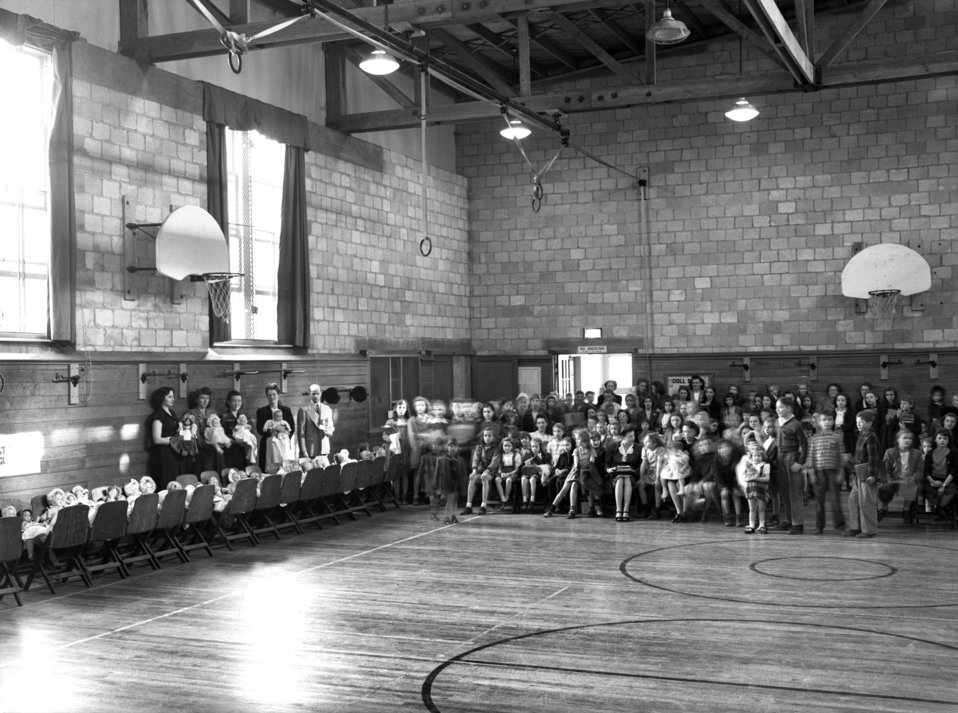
Doll Show Glennwood School Oak Ridge 1947

3275-8cpd DOE photo Ed Westcott 1-31-1947 Oak Ridge Tennessee